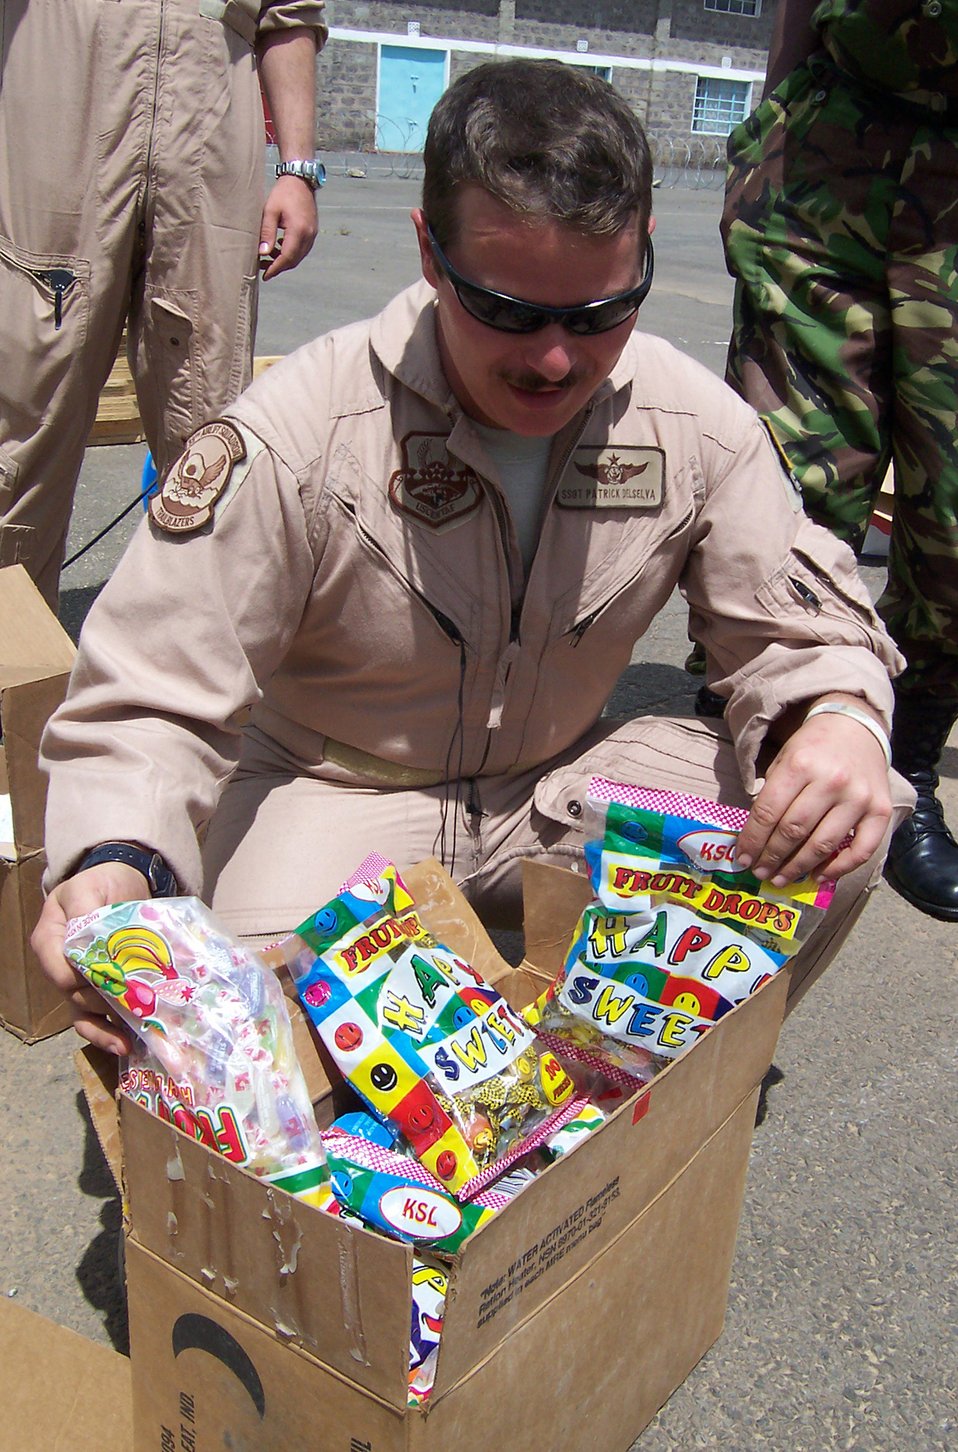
Airmen wrap up airdrop campaign

Staff Sgt. Patrick Delselva packs bags of candy in an empty Meals, Ready to Eat box in preparation for airdropping it to children in the Dadaab region of northeastern Kenya Dec. 14. In a six-day span the Air Force delivered more than 211,000 pounds of supplies to the region in support of Operation Unity Knight. Sergeant Delselva is deployed to the 746th Expeditionary Airlift Wing in Southwest Asia from Dyess Air Force Base, Texas.